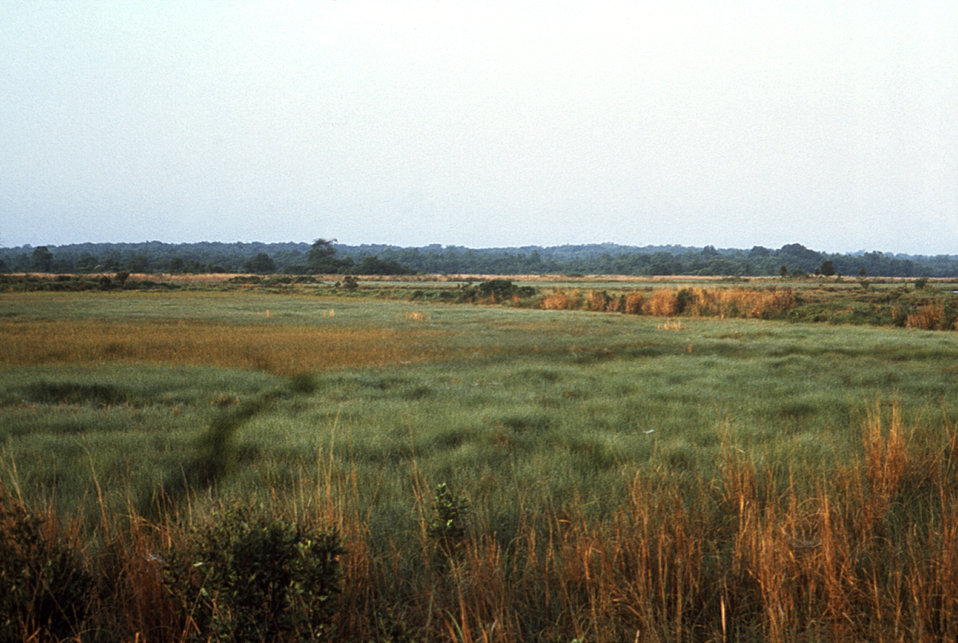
This 1976 photograph depicted a densely vegetated New Jersey salt marsh, which was divided into two regions, a 'high marsh', and a 'low marsh'.